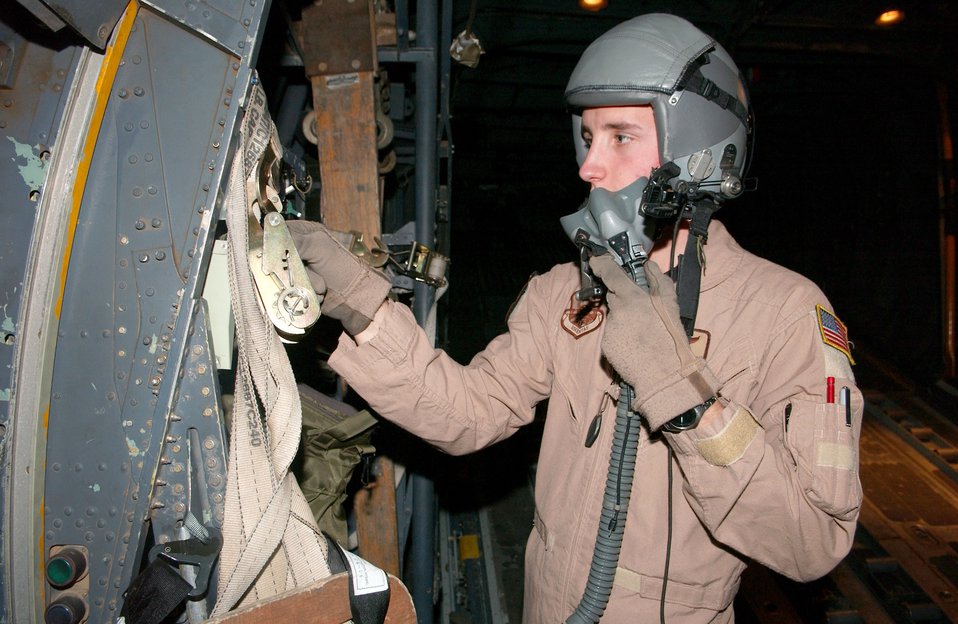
Loadmasters learn from mentors

Airman 1st Class Sheldon Cary performs a pre-flight check on his life support equipment Feb. 6 in Southwest Asia. He is a loadmaster assigned to the 746th Eexpeditionary Airlift Squadron.